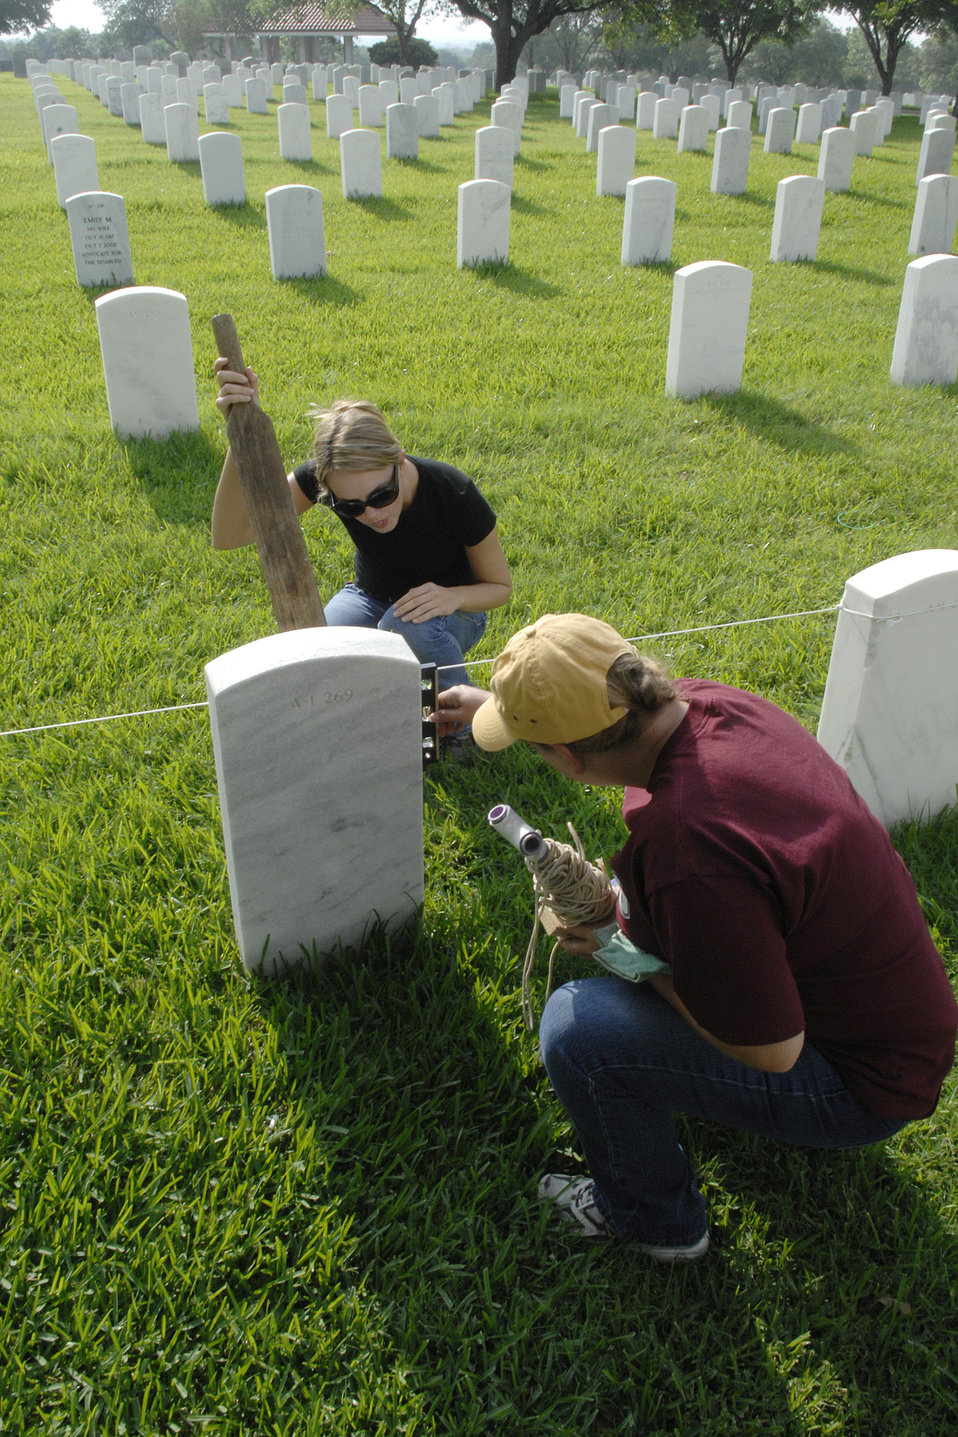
Serving those who served

Senior Airman Lana Mills, left, and Tech. Sgt. Stacy Simon straighten headstones May 15 at the Fort Sam Houston National Cemetery in San Antonio. This process aligns and straightens all the headstones and prepares the cemetery for funerals and the upcoming Memorial Day weekend. Airmen assigned to the Air Force News Agency in San Antonio spent the day adjusting the headstones.